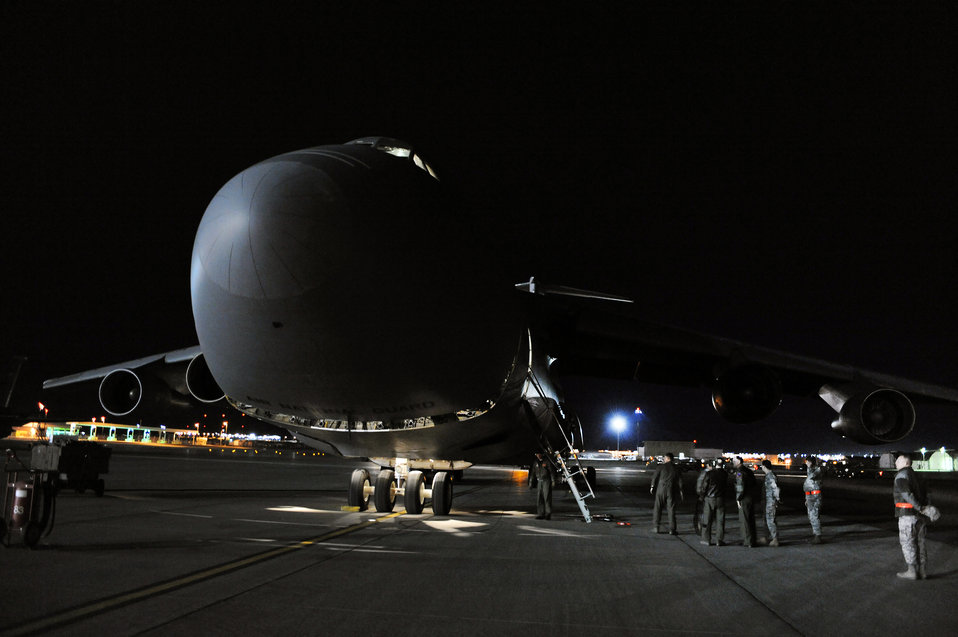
Creech Airmen return from Operation Unified Response mission

Airmen from the 432nd Wing returned home after supporting Operation Unified Response from Rafael Hernandez Airport in Puerto Rico March 5,2010 at Nellis Air Force Base, Nev.